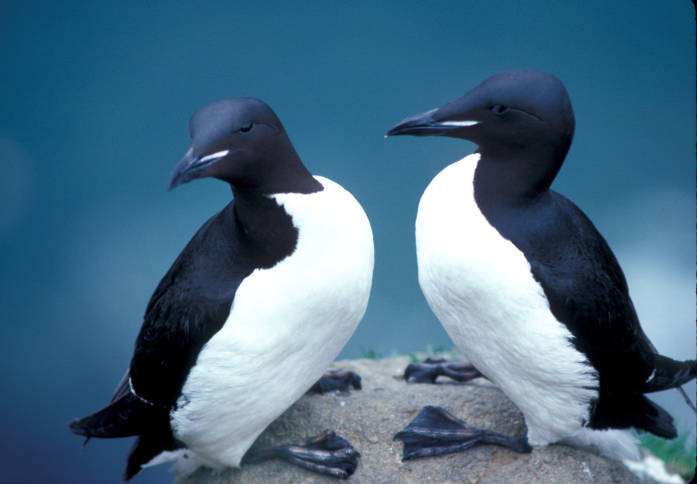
Thick-billed Murres, 1989